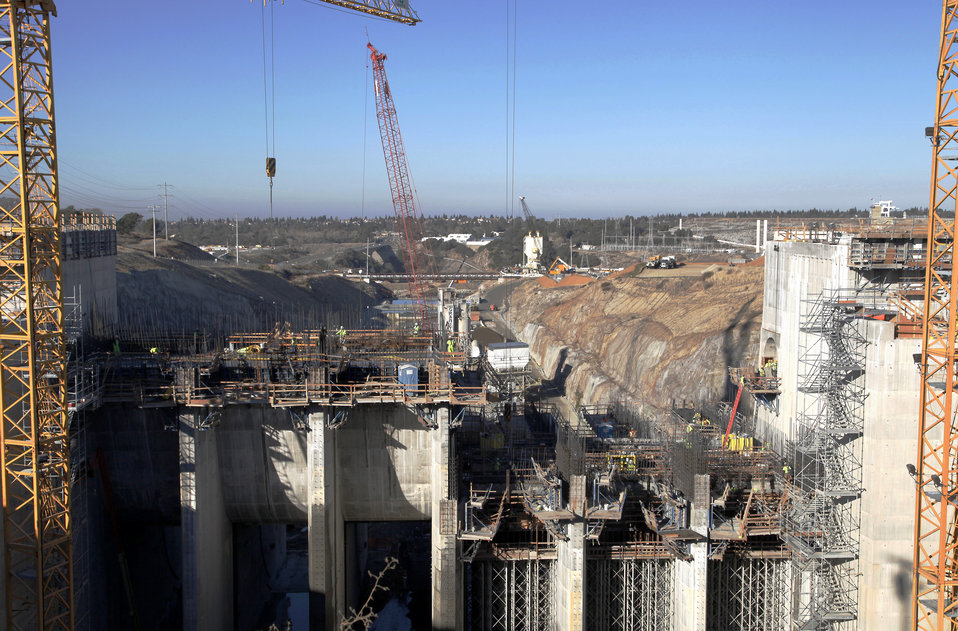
Gate support structure work continues at Folsom spillway project

Concrete support structures continue to rise at the Folsom Dam auxiliary spillway project Jan. 22, 2014 in Folsom, Calif., and will soon house six large tainter gates that control water flow.